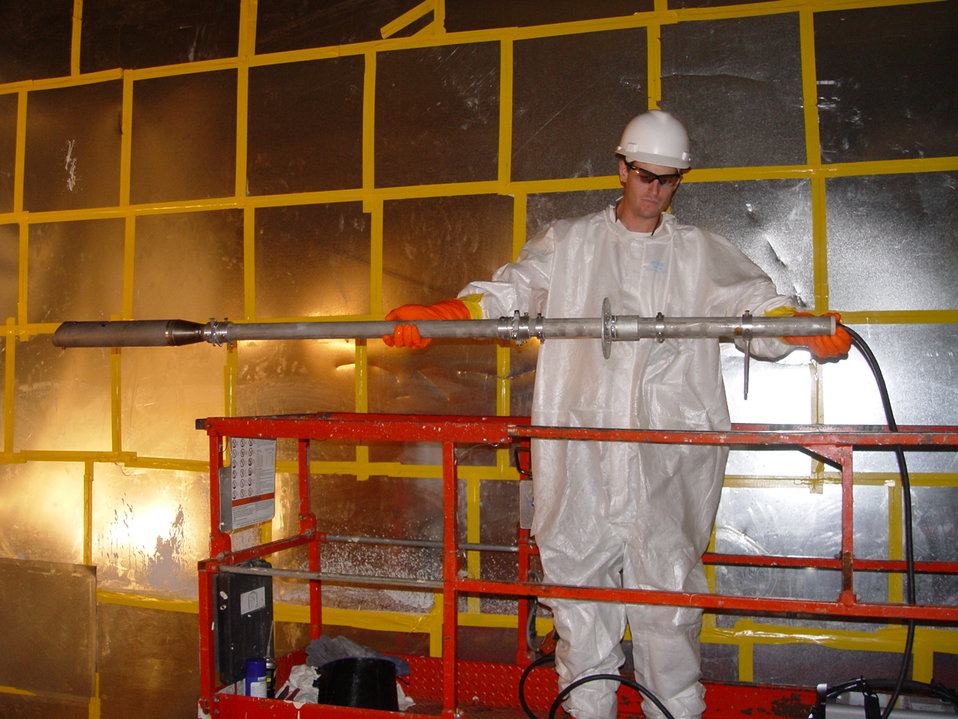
Recovery Act Funding Speeds Cleanup at Brookhaven National Laboratory

A Recovery Act worker cuts fuel channels from the 4,760-ton bioshield of the Brookhaven Graphite Research Reactor. The Lab is working to dismantle the shield, which was designed to protect personnel from radiation emitted from the graphite pile at the reactor’s core. In operation from 1950 to 1968, the reactor was the first of its kind built solely for peaceful research purposes.